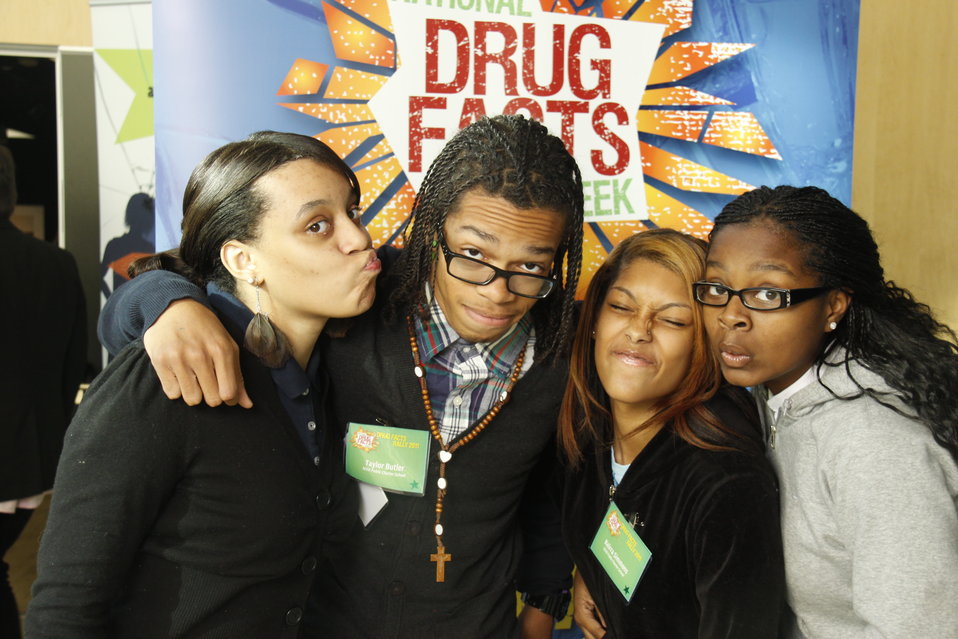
NDFW Mentor Event